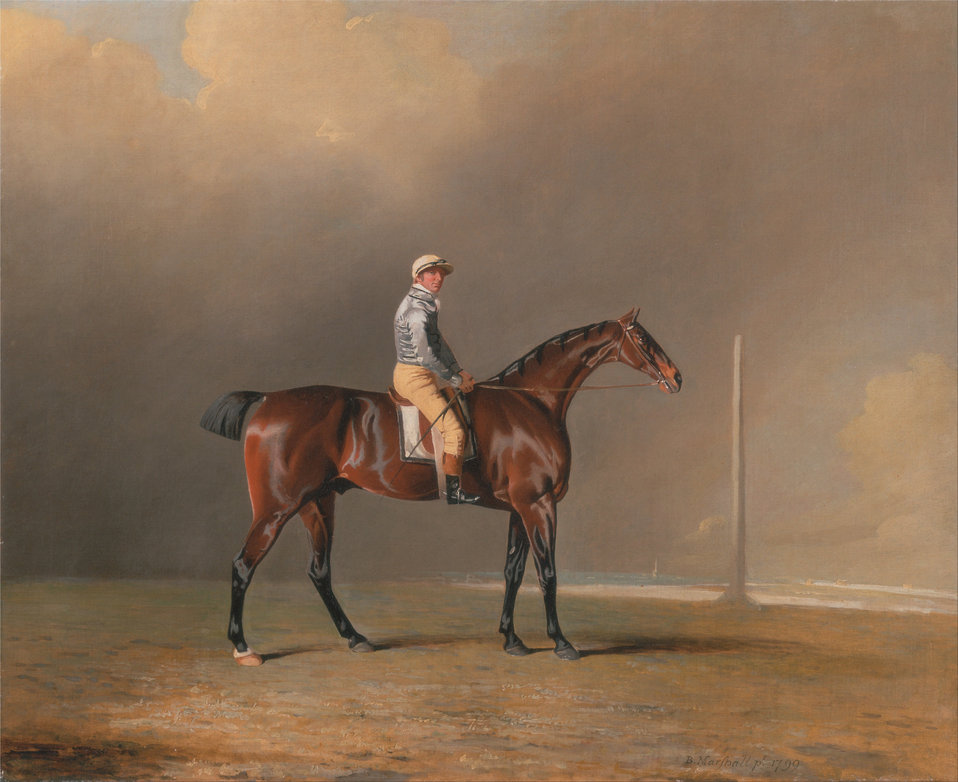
Benjamin Marshall - Diamond, with Dennis Fitzpatrick Up - Google Art Project